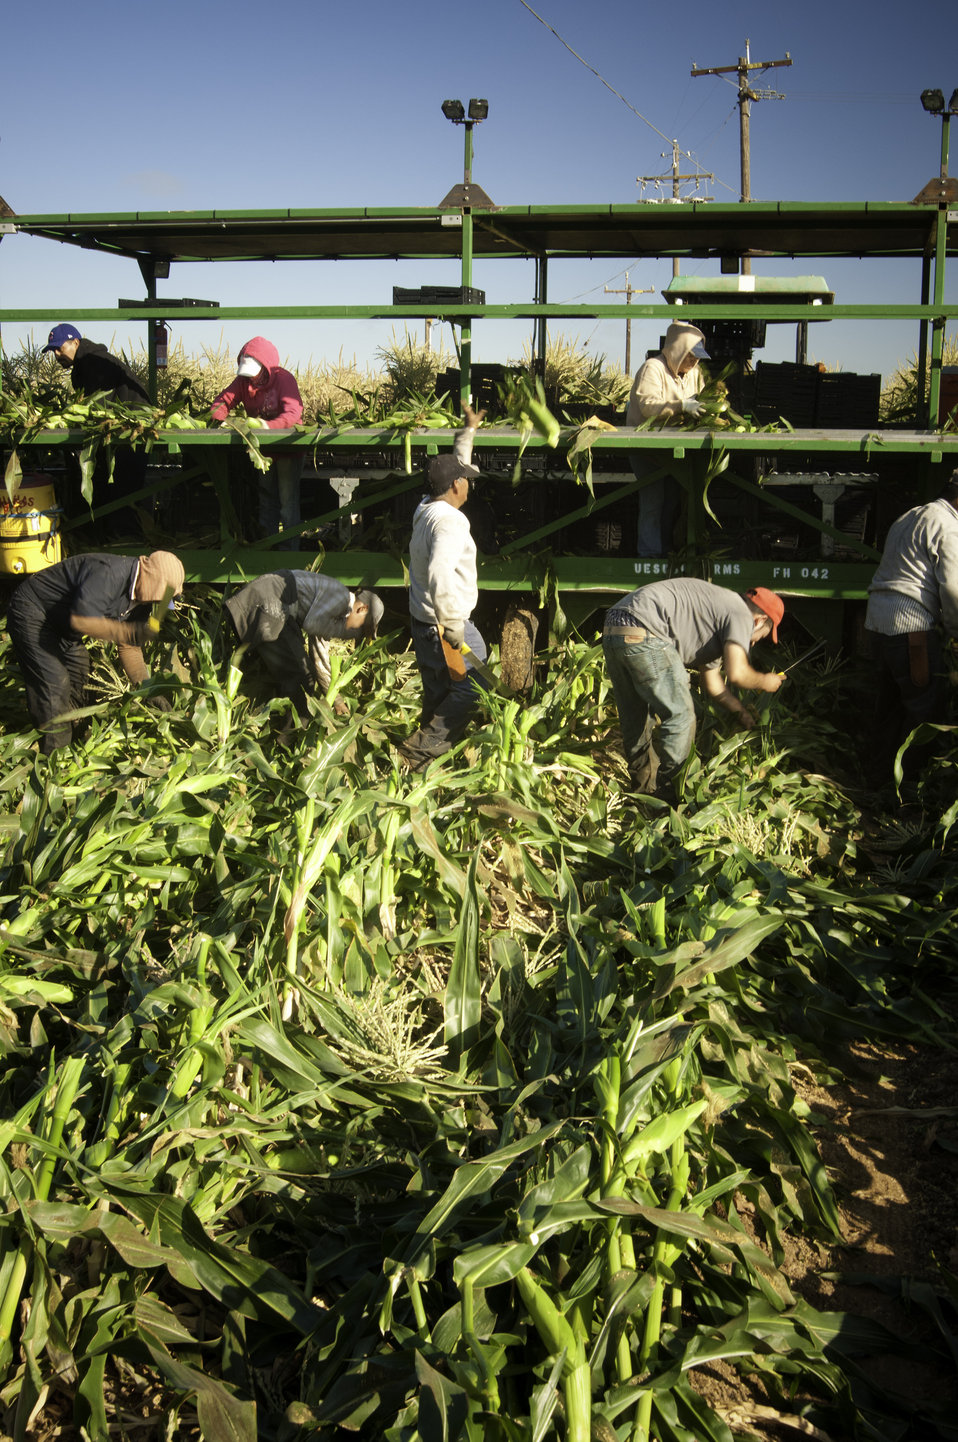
Migrant workers harvest corn on Uesugi Farms in Gilroy, CA on Wednesday, Aug. 28, 2013.